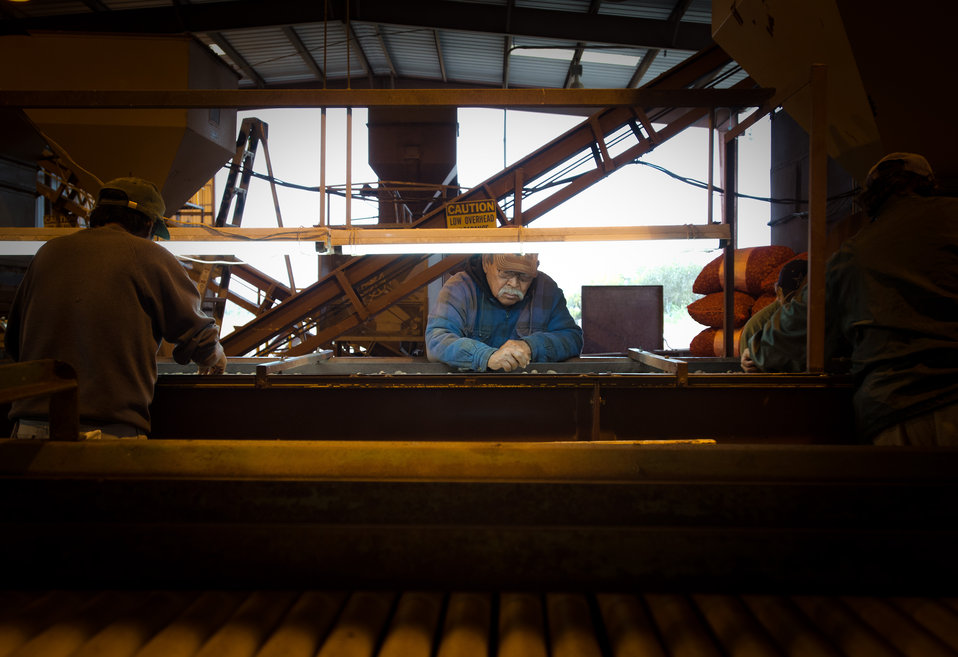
Left to right, Jesus Gomez, Teodoro Gamez, Jose Camacho and Juan Ayala apply their keen eye to sort out any pecans that are less than perfect from the last load of this season's harvest at Arrowhead Farms of Crystal City, TX, on Friday, December 9, 2011, owned by Mr. Akram Mohammad, a pecan farmer since 2005. The 719 acre farm with 10,000 trees, features some orchards with underground micro irrigation system that feeds water to the roots of 4,380 pecan trees on 146 acres. Mr. Mohammad said, “USDA (U.S. Department of Agriculture) was essential to my business and trees surviving the recent exceptional drought. The trees were stress free thanks to underground micro-irrigation. This is essential to the future growth of Texas agriculture and good for America.” U.S. Department of Agriculture’s (USDA) Environmental Quality Initiative Program (EQIP) awarded Mr. Mohammad a $130,000 grant in 2008. He provided $26,000 for the balance of the $156,000 total cost to install a 146-acre underground micro-irrigation for 4,380 trees.